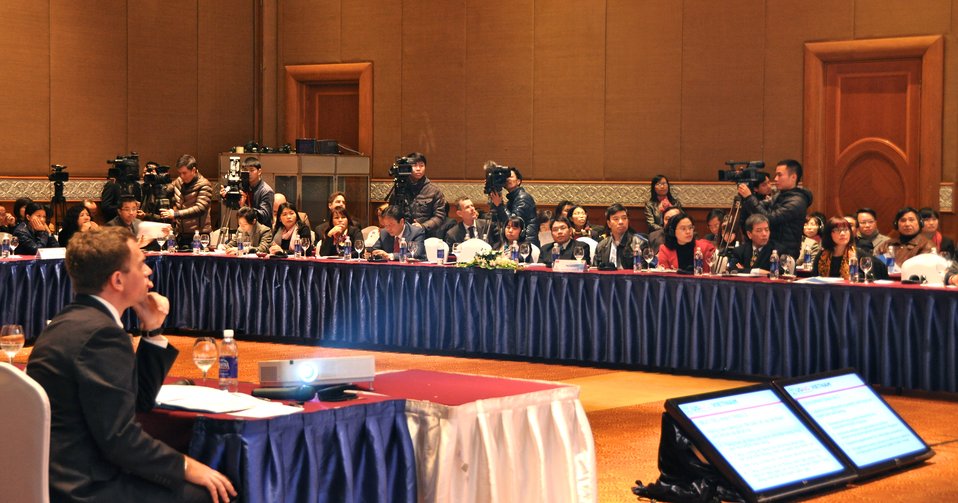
USAID Launches Five Year Partnership Strategy and Governance for Inclusive Growth Program